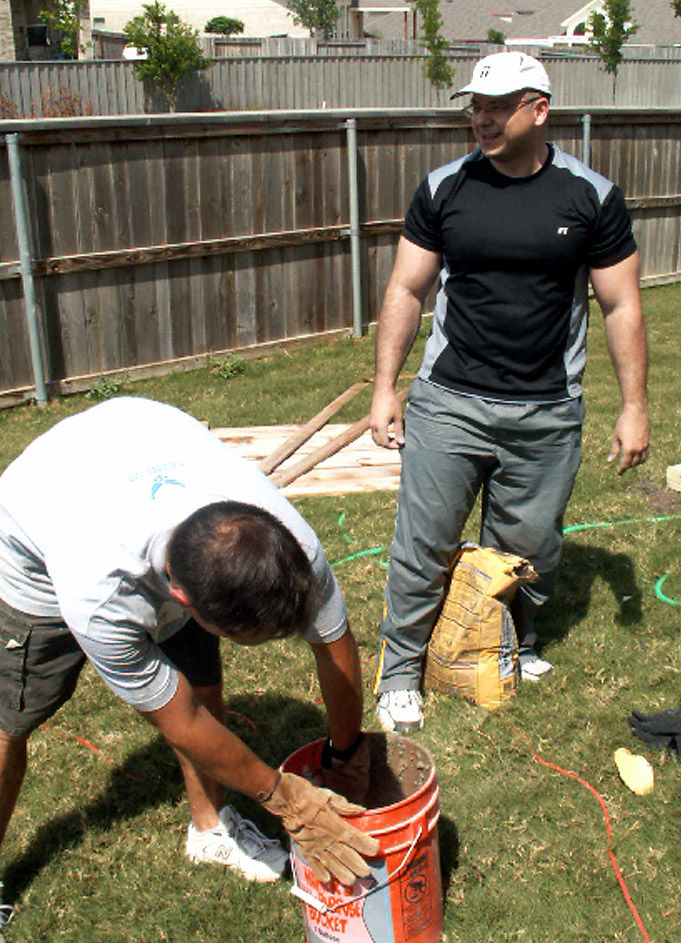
AFPC Airmen help wounded warrior improve quality of life

Master Sgts. Tracy Deason (left) and Angel Espinosa mix cement while participating in Operation Homefront April 30 in Cibolo, Texas. Volunteers from the Top 3 Association from Air Force Personnel Center from Randolph Air Force Base, Texas, helped craft a gate to provide better access between the front and back yards for Tech. Sgt. Israel Del Toro, an Airman recovering from wounds sustained during a roadside bombing in Afghanistan. Sergeants Deason and Espinosa are personnelists at AFPC.